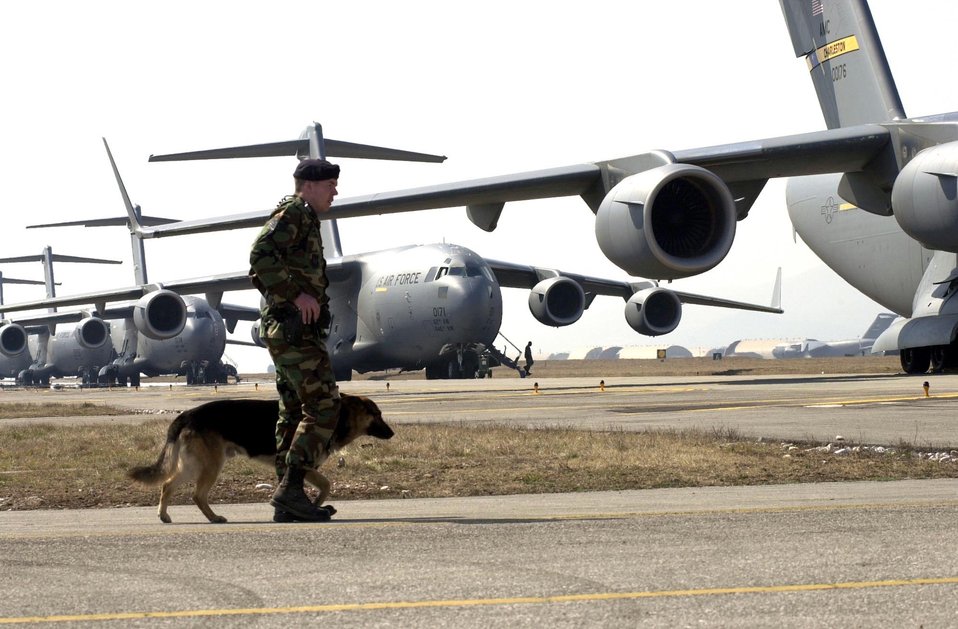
Globemaster line

OPERATION IRAQI FREEDOM -- C-17 Globemaster IIIs await orders to load and launch in support of Operation Iraqi Freedom at a forward-deployed location.